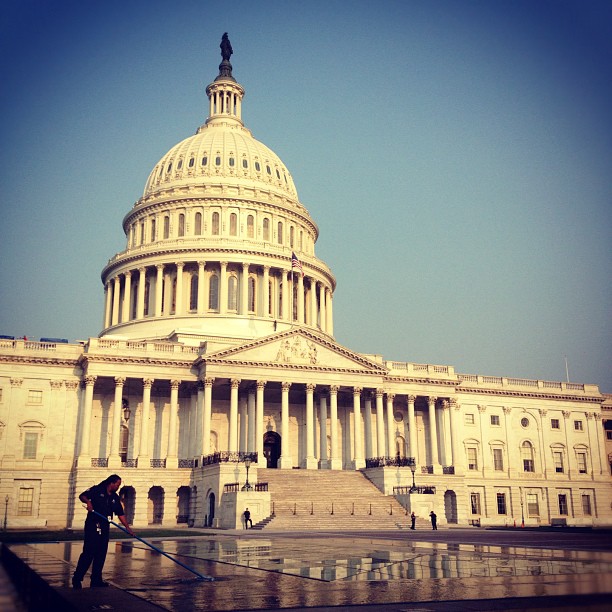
Morning at the Capitol. AOC employee prepares @visitthecapitol skylights for visitors.